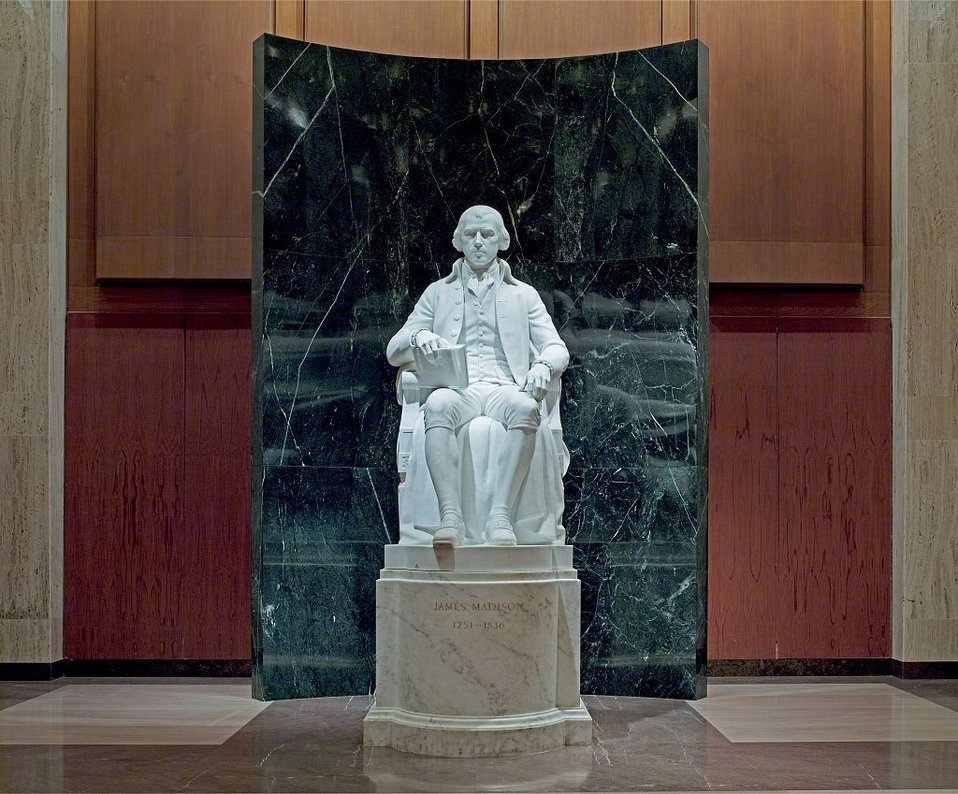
James Madison Statue

Statue of James Madison located in James Madison Memorial Hall in the Library of Congress James Madison Memorial Building.